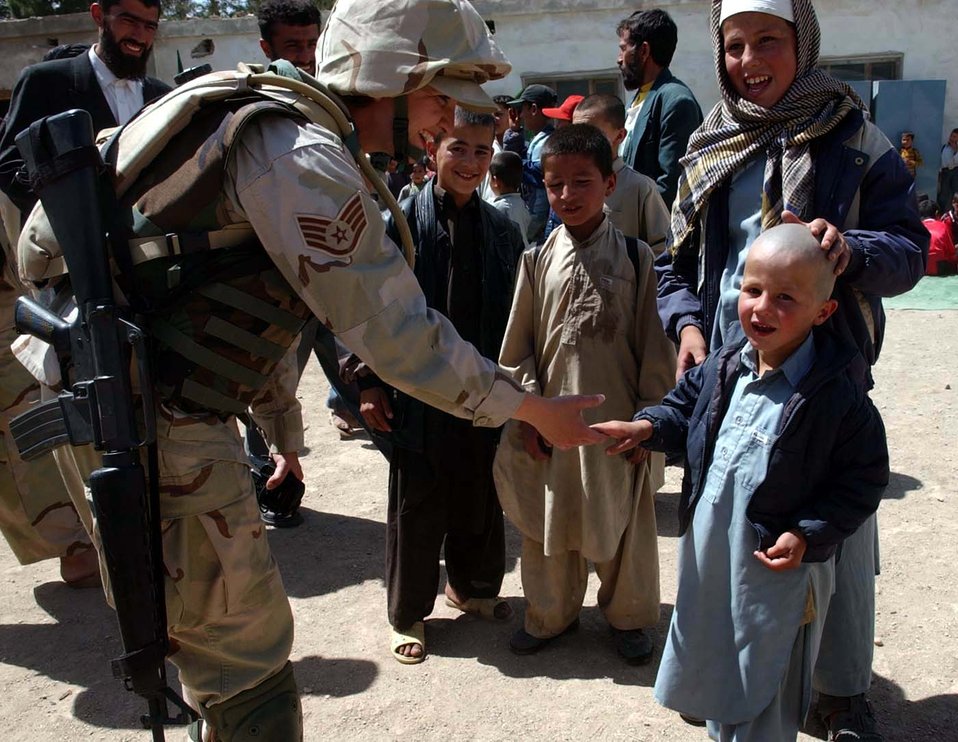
Nice to meet you

CHARGAR, Afghanistan -- Staff Sgt. Nikole Tipton spreads some American good will at the Kapisa Orphanage here during a visit April 8. Sergeant Tipton is assigned to the 455th Expeditionary Operations Group at Bagram Air Base. About 40 Airmen from the group delivered hundreds of pounds of clothing, food and toys to more than 250 children living at the orphanage as part of the group's Adopt-A-Village program.